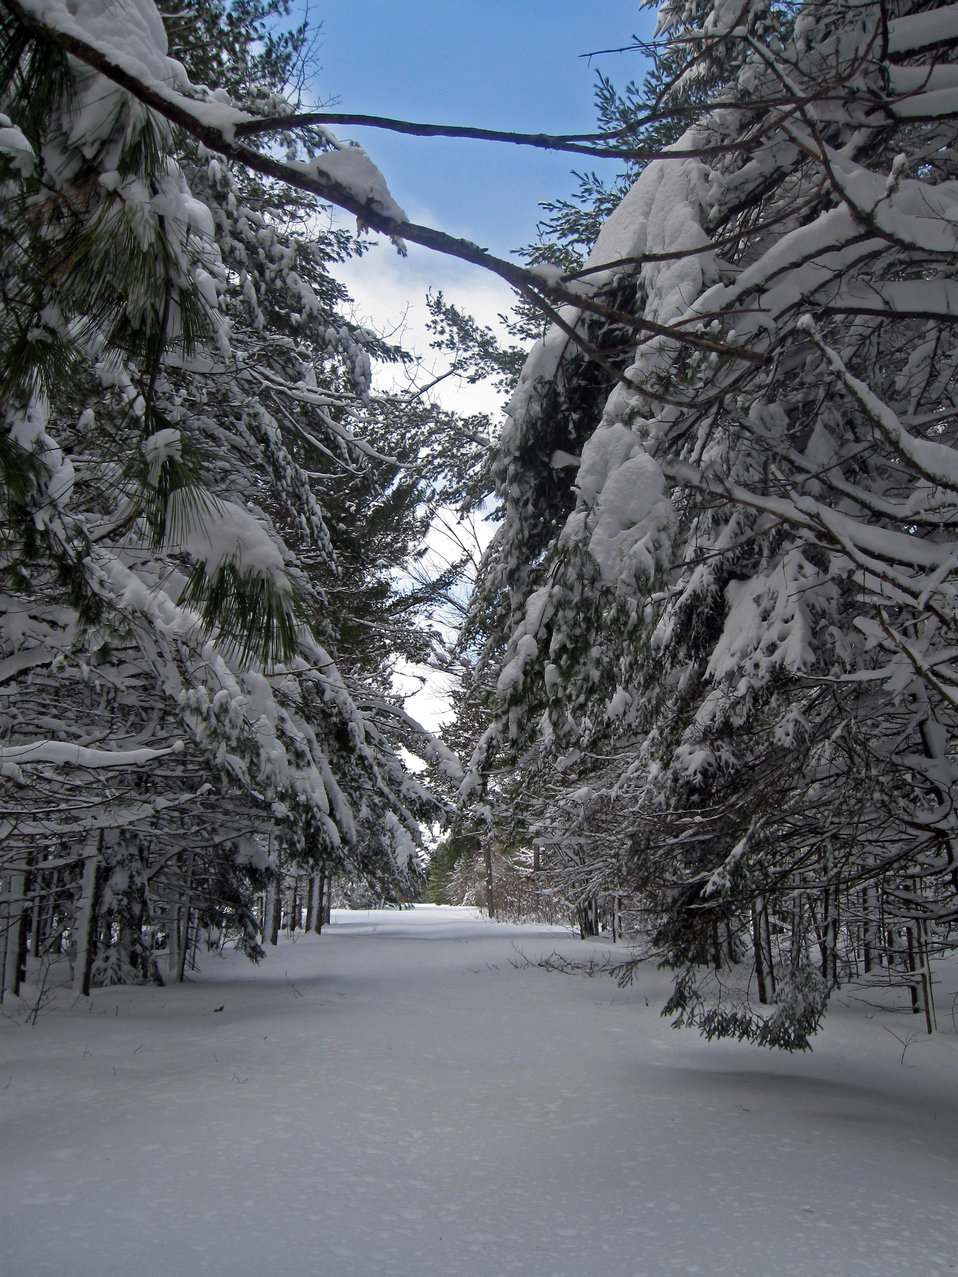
Winter at Moosehorn